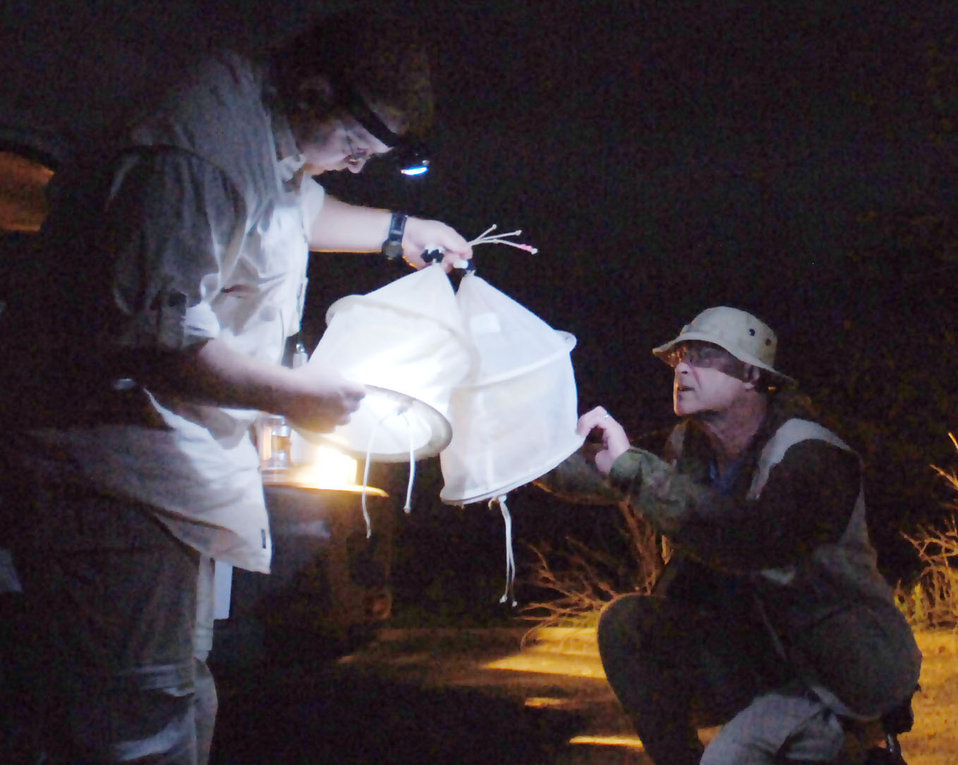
Military team works to prevent, treat deadly disease

1st Lt. Earl Thomas (left) and Col. (Dr.) James Swaby examine traps during the vector-borne and infectious eisease field diagnostic development initiative Jan. 9, 2010, in Marigat, Kenya. The team assembled and hung traps to catch sand flies, which carry leishmaniasis. Lieutenant Thomas is an entomologist from Brooks City-Base, Texas, and Doctor Swaby is the 59th Medical Wing Clinical Research Division chief from Lackland Air Force Base, Texas.